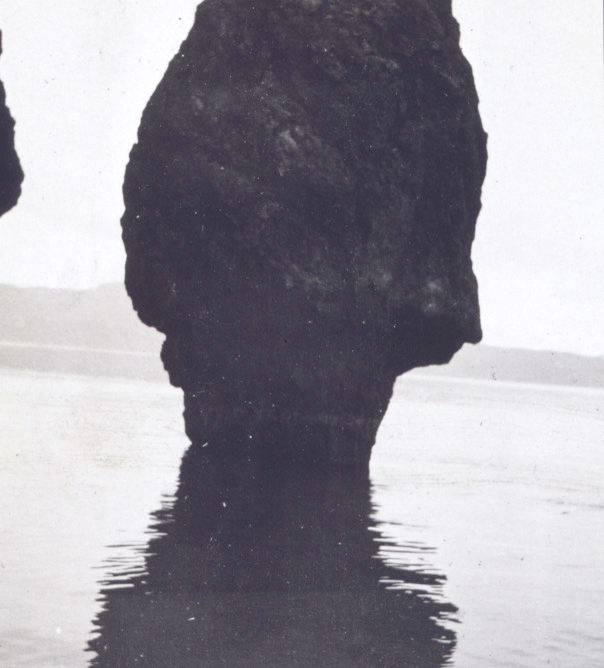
Mushroom-shaped rock